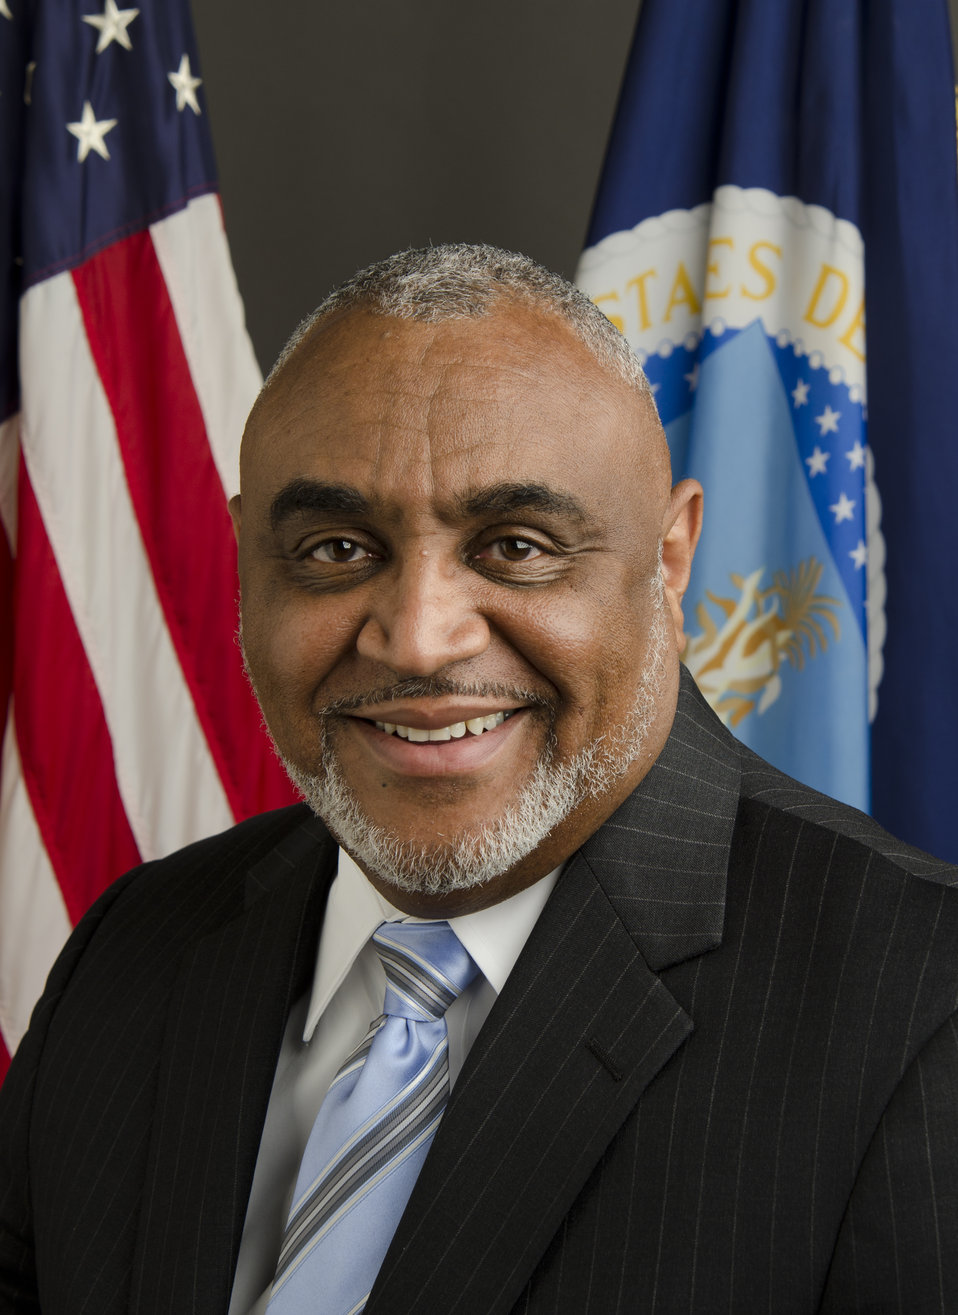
20130702-DM-KJH-0982 Deputy Assistant Secretary for Administration Malcom Shorter

U.S. Department of Agriculture (USDA) Deputy Assistant Secretary Administration Malcom Shorter.